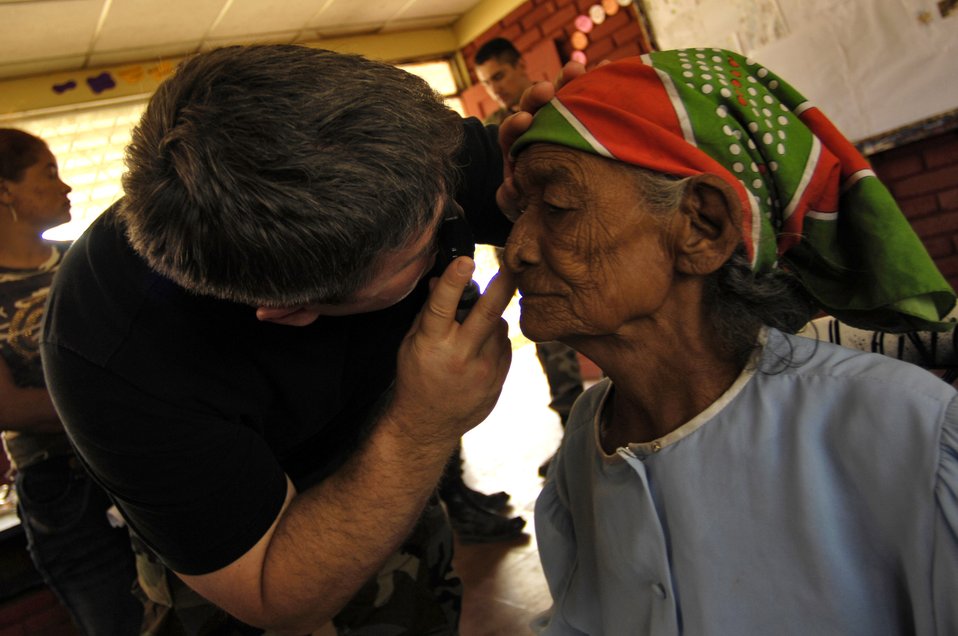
Airmen complete Nicaraguan medical exercise

Maj. Michael Osterhoudt assesses a woman's eyesight while participating in Medical Readiness Training Exercises in Santa Teresa Feb. 26 during New Horizons - Nicaragua 2007. The $7.25 million joint U.S. and Nicaraguan military humanitarian and training exercise, provides a new school and medical clinic, as well as free health and veterinary care, giving aid and strengthening bonds between the two nations. Major Osterhoudt is from the 9th Medical Group at Beale Air Force Base, Calif.